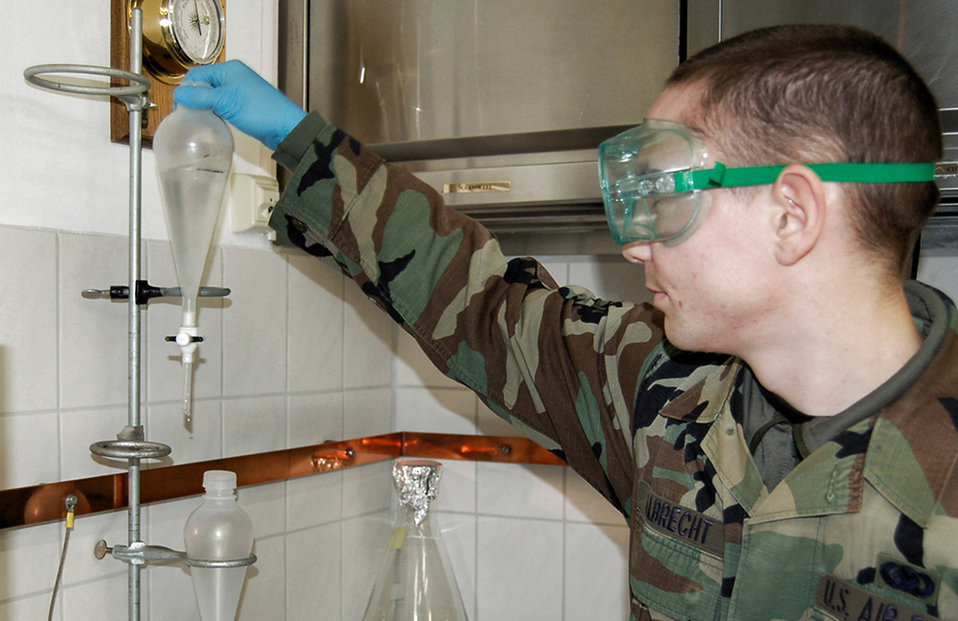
Fuel: No flying without the good stuff

Airman 1st Class Darren Albrecht finishes shaking fuel and water together for five minutes at Spangdahlem Air Base, Germany. Water is added to the fuel for this test because it traps the fuel system icing inhibitor, pulling it out of the fuel. After two minutes he will learn the FSII level on a refratometer. Airman Albrecht is a 52nd Logistics Readiness Squadron fuel laboratory technician.